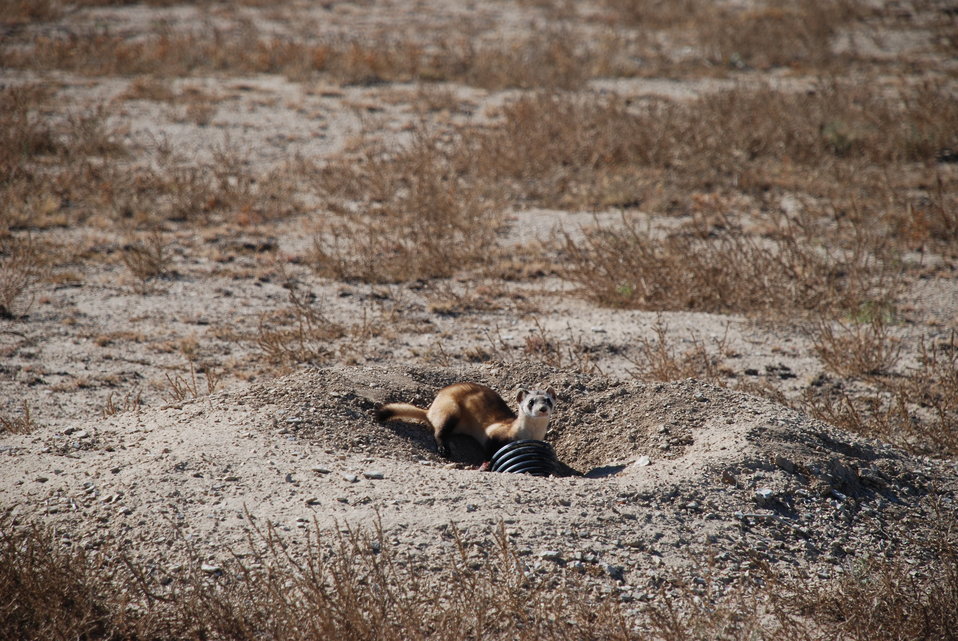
Black-footed Ferret Release

On Wednesday, October 30, 2013, thirty endangered black-footed ferrets were released onto cattle rancher Gary Walker's land, west of Pueblo, Colorado.

The release launched a potentially new way of preserving endangered species and was accomplished by way of a Safe Harbor Agreement (SHA). This SHA provides opportunities for private and Tribal landowners to volunteer their lands for reintroductions of this endangered species without affecting their land-use activities beyond mutually agreed-upon measures. It also extends these assurances to surrounding non-participating lands and other landowner interests. This SHA will be an important step in promoting the recovery of this iconic species.